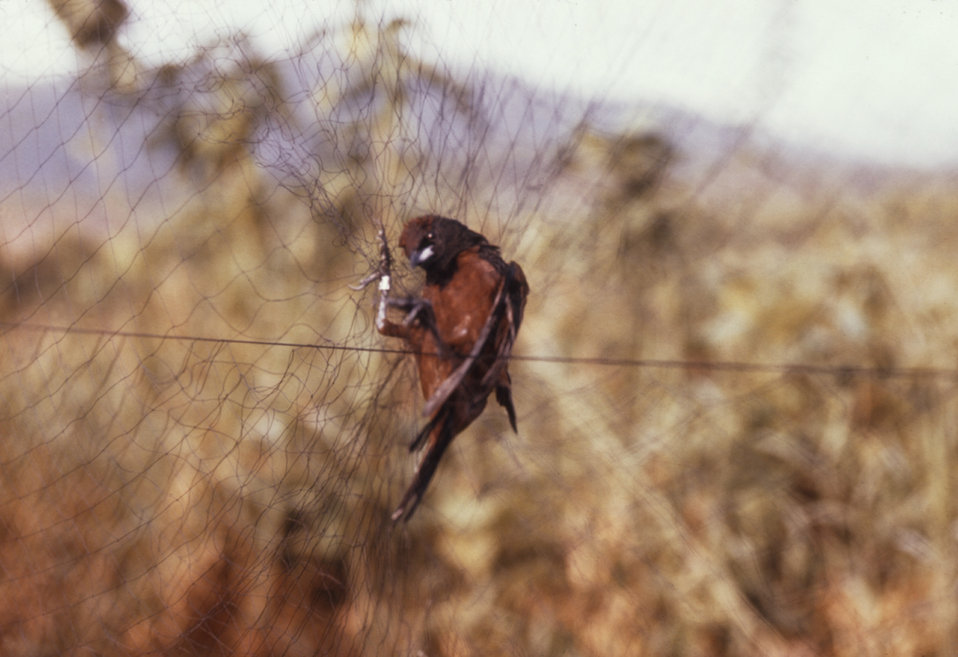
This bird was captured within a net, and will later be tested in an arbovirus study.